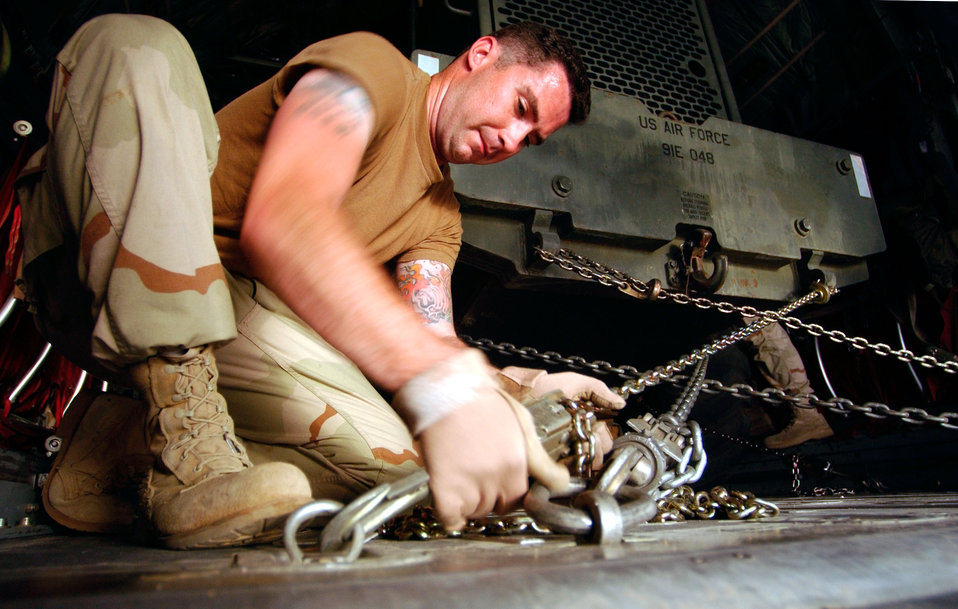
Securing a load

OPERATION IRAQI FREEDOM -- Staff Sgt. Matthew Woodcock, Mission Support Team member, 621st Air Mobility Group, McGuire Air Force Base, N.J., secures a forklift onto a C-130 Hercules at an undisclosed location on April 11. Two C-130s delivered a Global Mobility Assessment Team, 621st Air Mobility Group, McGuire AFB, N.J., and a Mission Support Team to Baghdad International Airport in support of Operation Iraqi Freedom. It is the GAT's responsibility to assess all aspects of the airfield in order to accommodate future strategic airlift from Baghdad airfield.